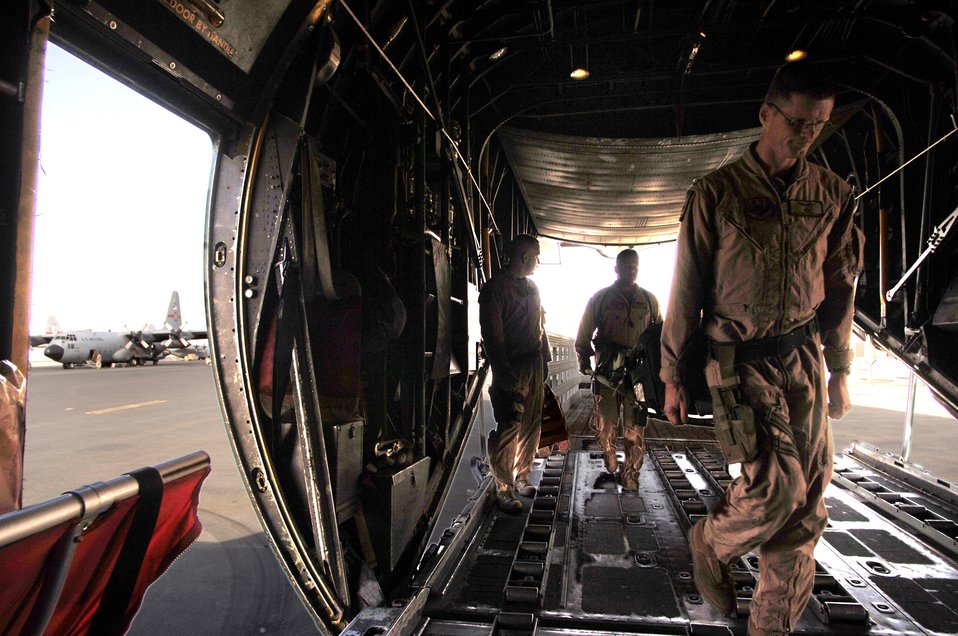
Aeromedical evacuation mission

Prior to an aeromedical evacuation mission over Southwest Asia, 379th Expeditionary Aeromedical Evacuation Squadron flight nurses Capt. Nathan Ferguson and 1st Lt. Christopher Cesa load medical equipment onto a C-130 Hercules. The C-130 will serve as a